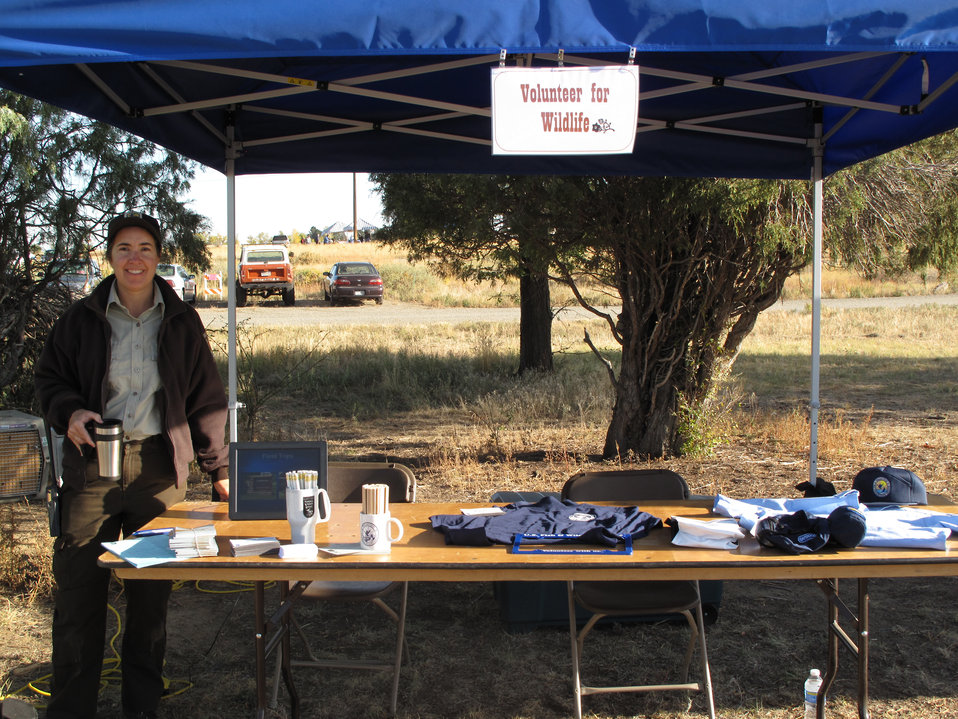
Refuge Round-up 2010

They had many different types of booths set up for you to visit. This one gave you more information on volunteering for the service.